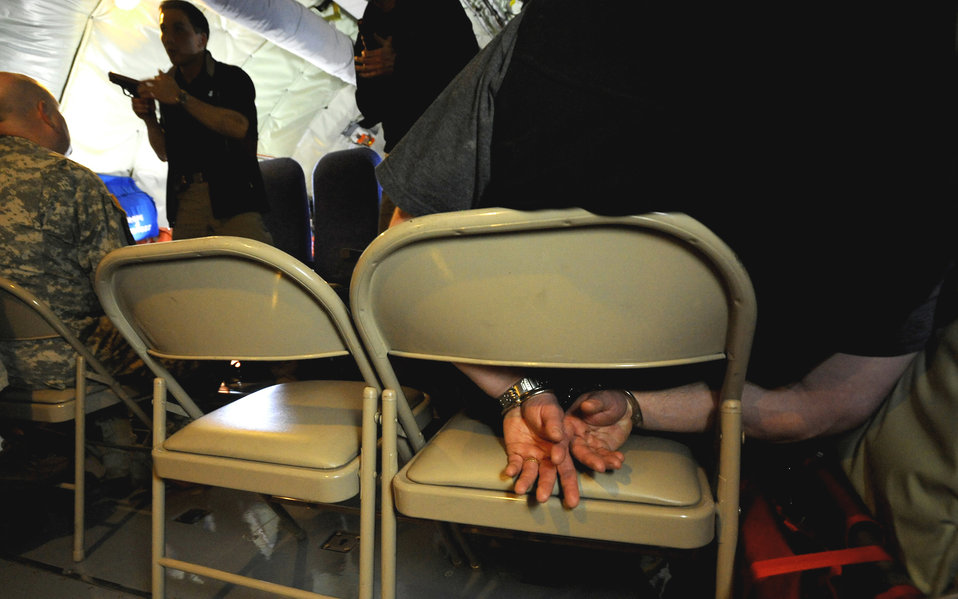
Artic Fencing Interagency Arrow 2010

Federal air marshals take control of a simulated situation after a man threatened passengers onboard a plane during Arctic Fencing Interagency Arrow 2010 field training exercise May 26, 2010, at Elmendorf Air Force Base, Alaska.